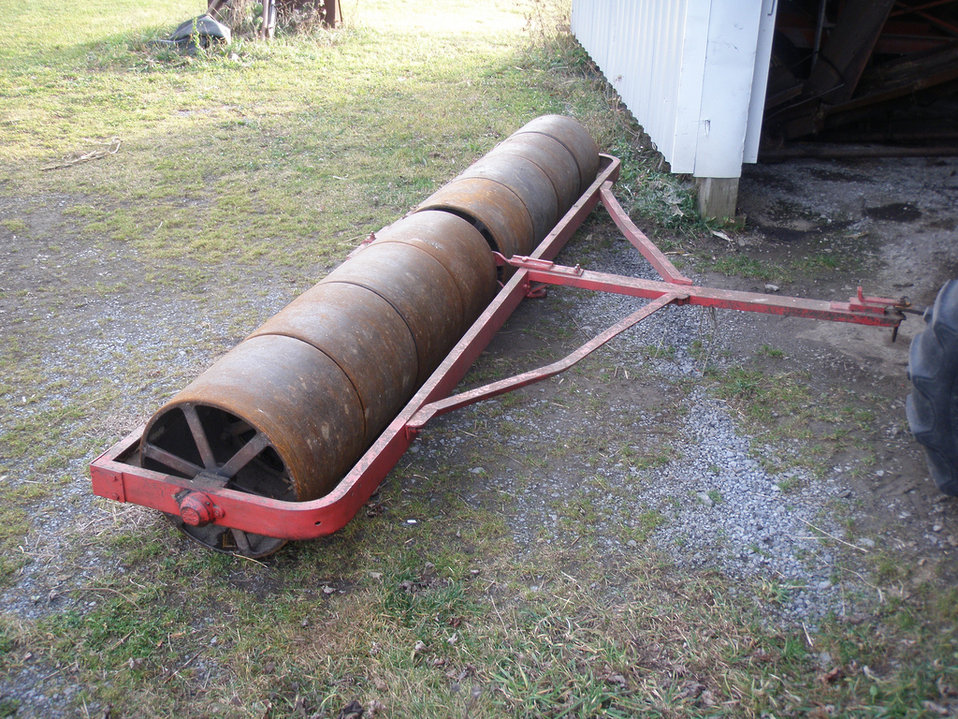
A 12 foot smooth roller